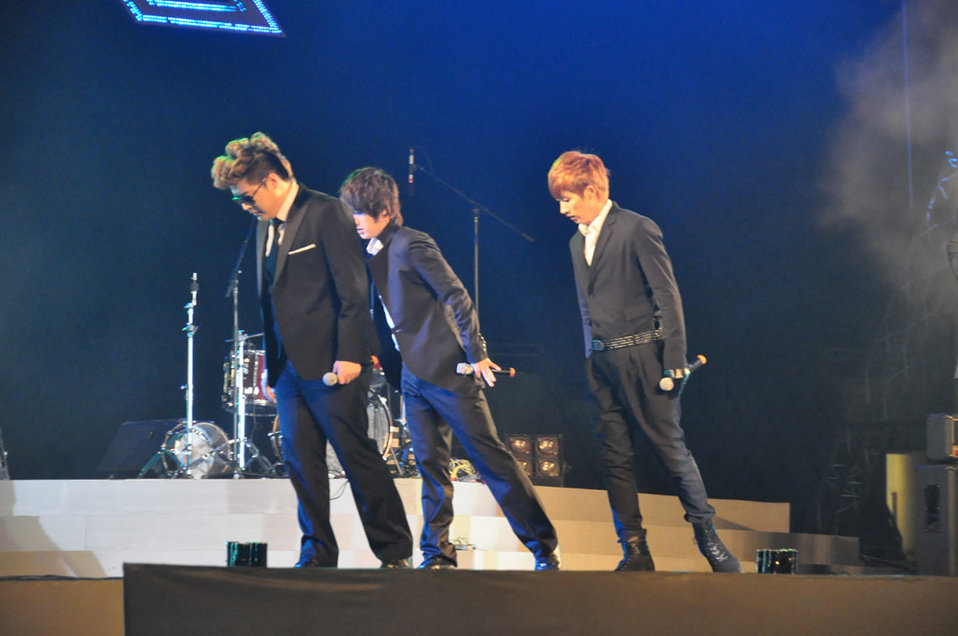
Super Junior performs at the MTV EXIT Hanoi concert March 27, 2010

Super Junior performs in Hanoi.